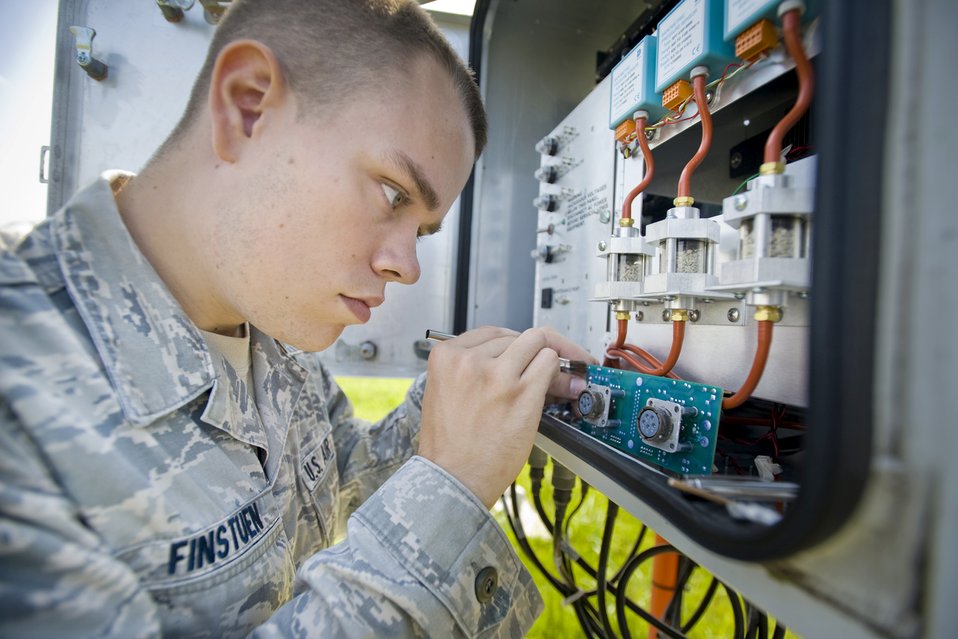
Maintaining an automatic observation system

Senior Airman Kevin Finstuen conducts a corrosion control check on an automatic observation system on the flightline Aug. 17, 2010, at Misawa Air Base, Japan. When performing maintenance on the weather system, Airman Finstuen checks for corrosion and any deterioration caused by the elements of nature. Airman Finstuen is an airfield systems maintenance technician with 35th Communications Squadron.